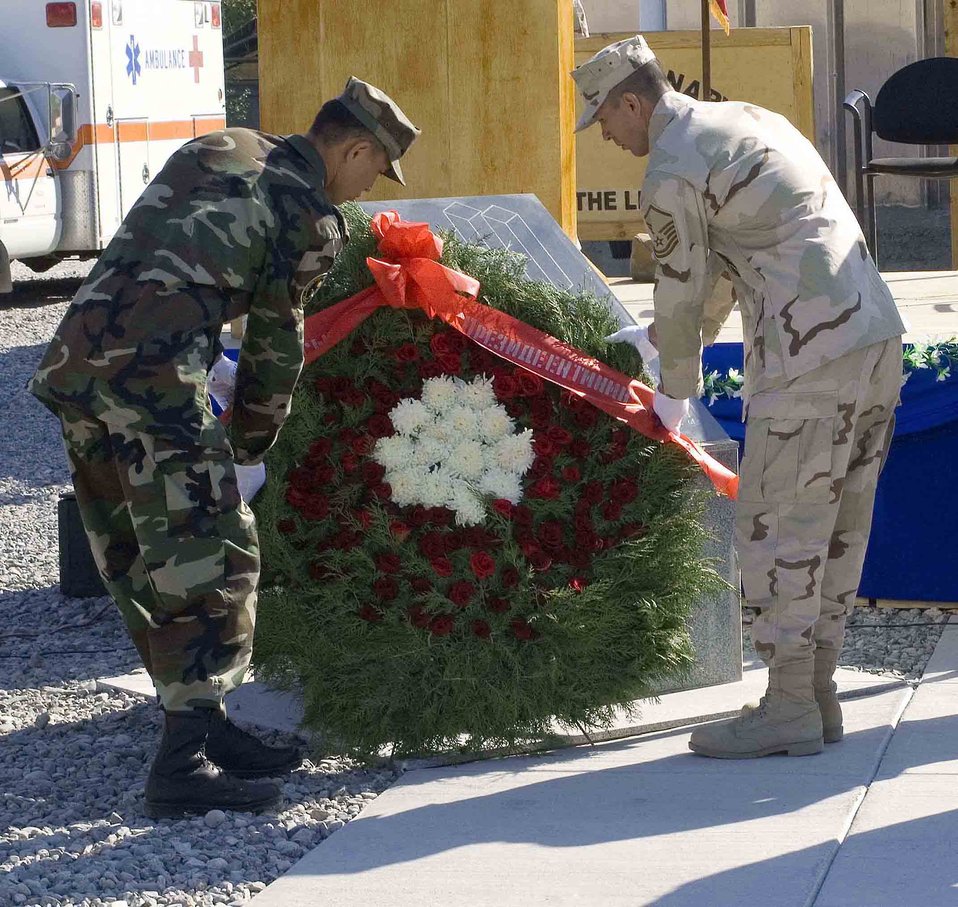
Manas Air Base hosts Kyrgyz president

Master Sgt. Tung Nguyen (right), 376th Expeditionary Contracting Squadron, and a member of the Kyrgyz military place a wreath at the base of the Peter J. Ganci memorial during a remembrance ceremony at Manas Air Base, Kyrgyzstan, Sept. 11.